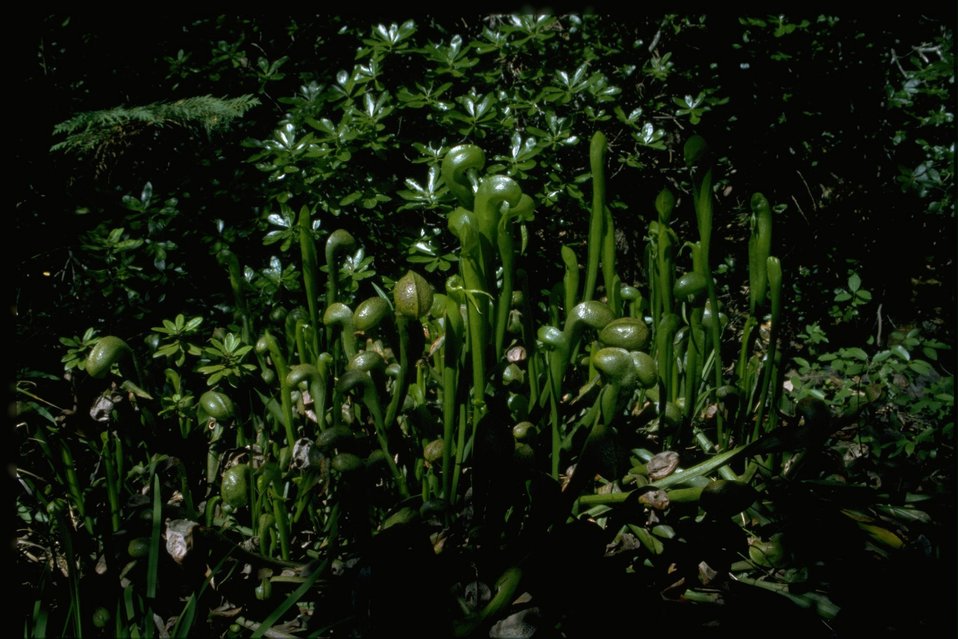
Farshot of Cobra Lily, Darlingtonia californica.